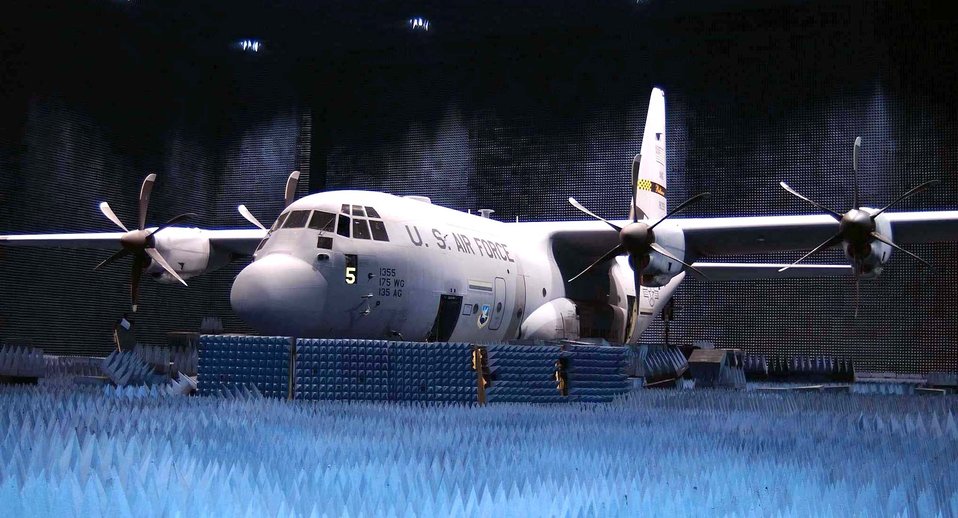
This is a test...

EDWARDS AIR FORCE BASE, Calif. -- A C-130J Hercules sits in the Benefield Anechoic Facility for defense systems testing. The new defense systems installed on the aircraft have never been used in the United States before, and the 412th Test Wing is testing the aircraft in the BAF.